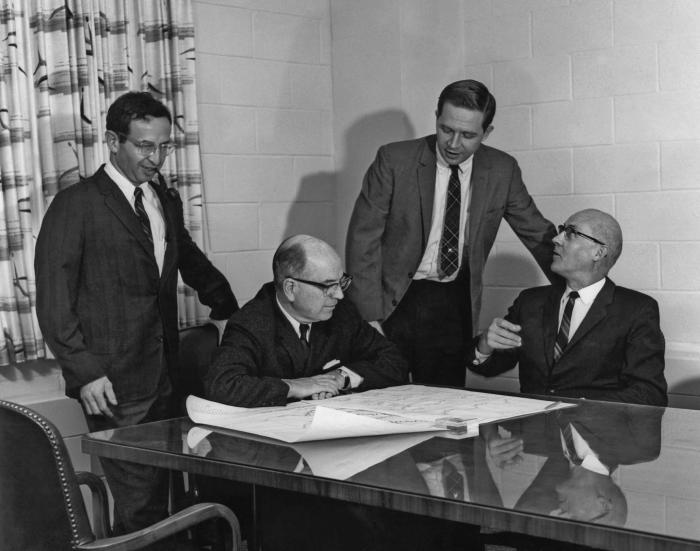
This photograph depicted Epidemic Intelligence Service (EIS) officials in a meeting at the Centers for Disease Control and Prevention (CDC) in Atlanta, Georgia.